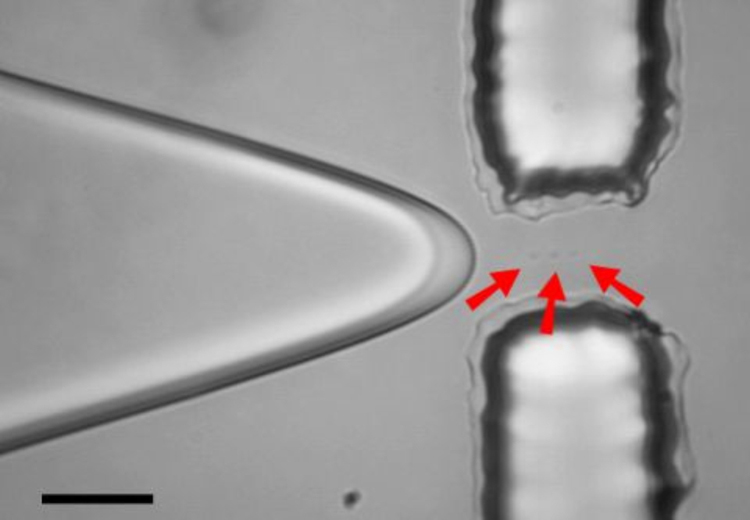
Microdroplets

The NIST 'on-demand' single-molecule drop dispenser: Water flows through a microfluidic channel, roughly 35 microns wide, and enters a narrow constriction where it breaks up into droplets. Varying the width of the constriction changes the size of the drops and lacing the water with desired molecules of just the right concentration causes the resulting droplets to pick up single molecules of interest 99 percent of the time.